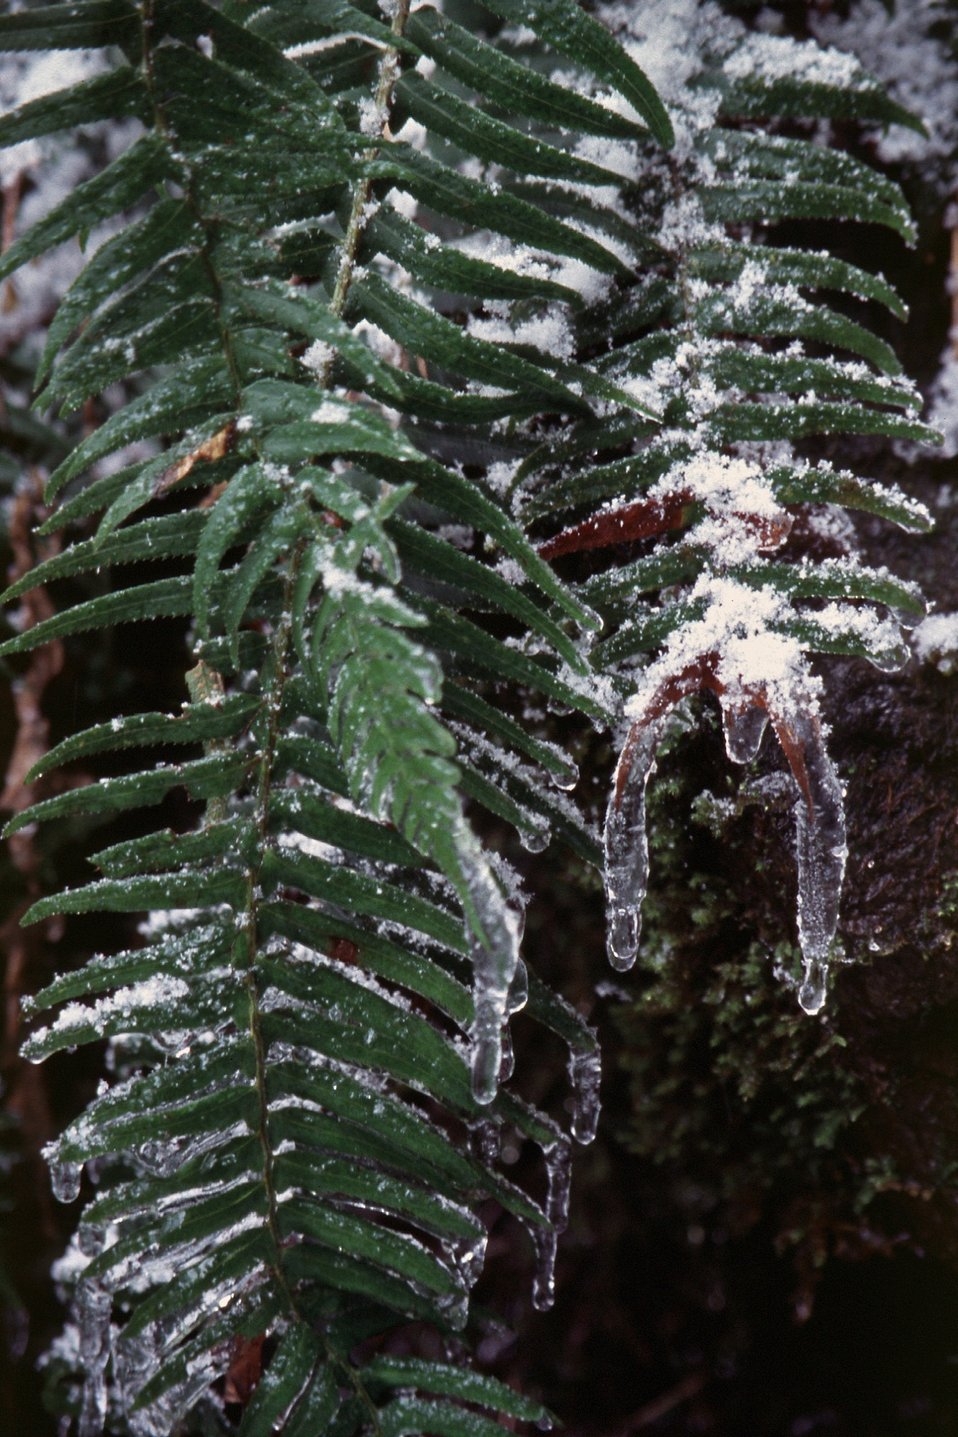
Mid Winter forest scene in the Mollala Corridor.